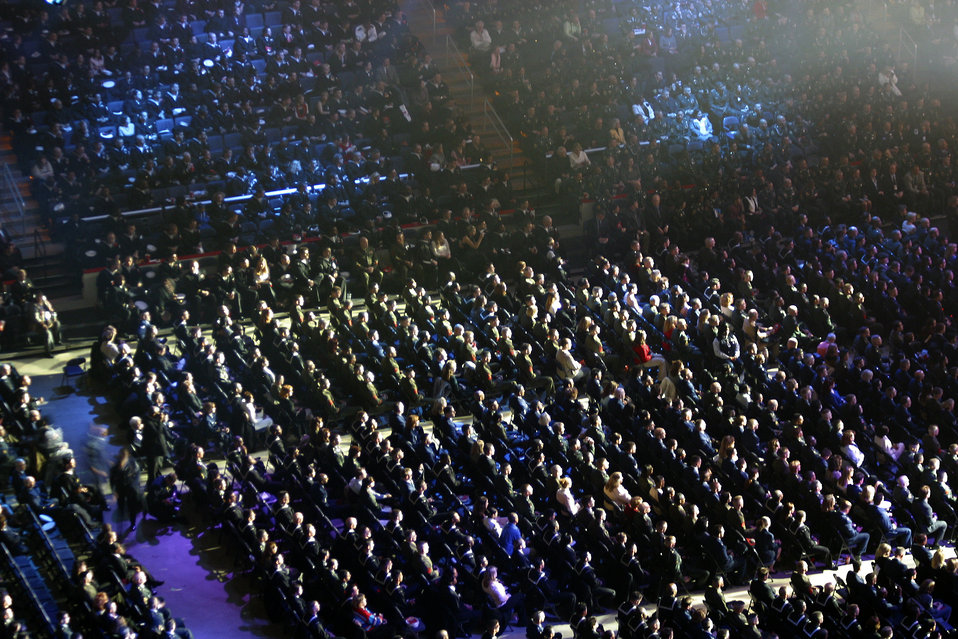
Musicians, celebrities entertain those who serve

WASHINGTON -- More than 7,500 servicemembers attended the